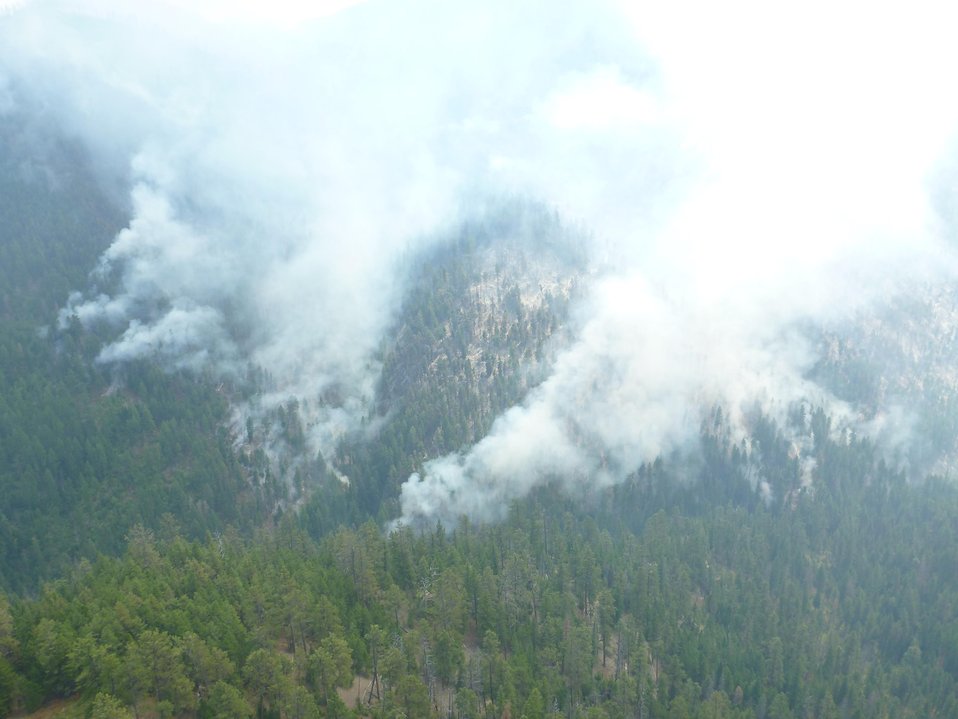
The Lolo Creek Fire in the Lolo National Forest near Lolo, MT began on Aug. 18, 2013 by lightning has consumed approximately 10,892 acres and is 47% contained.